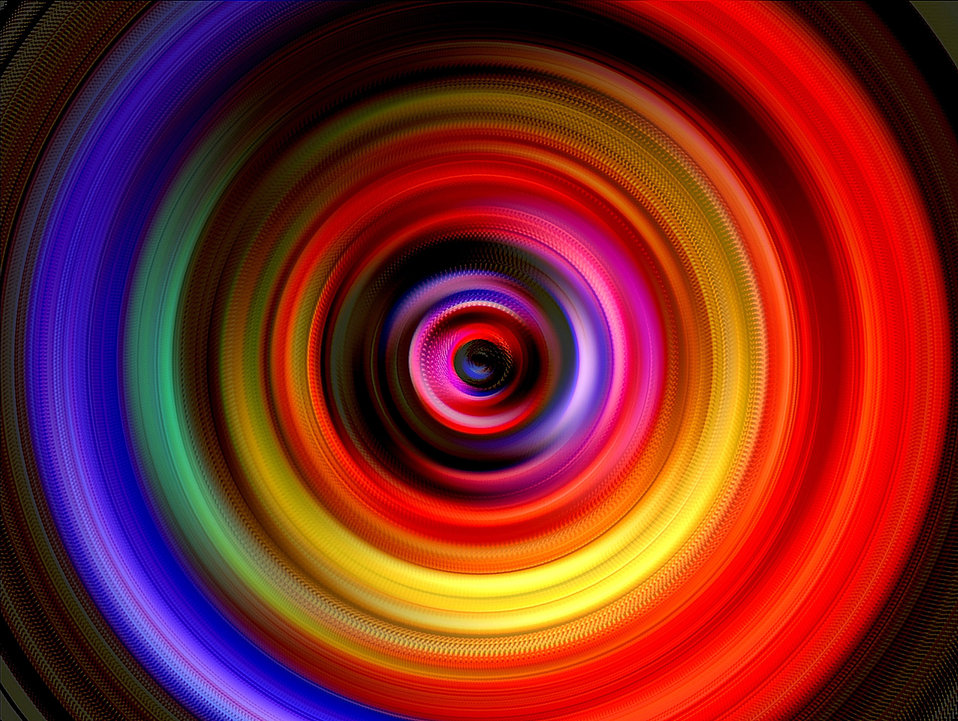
Color wheel

Background.